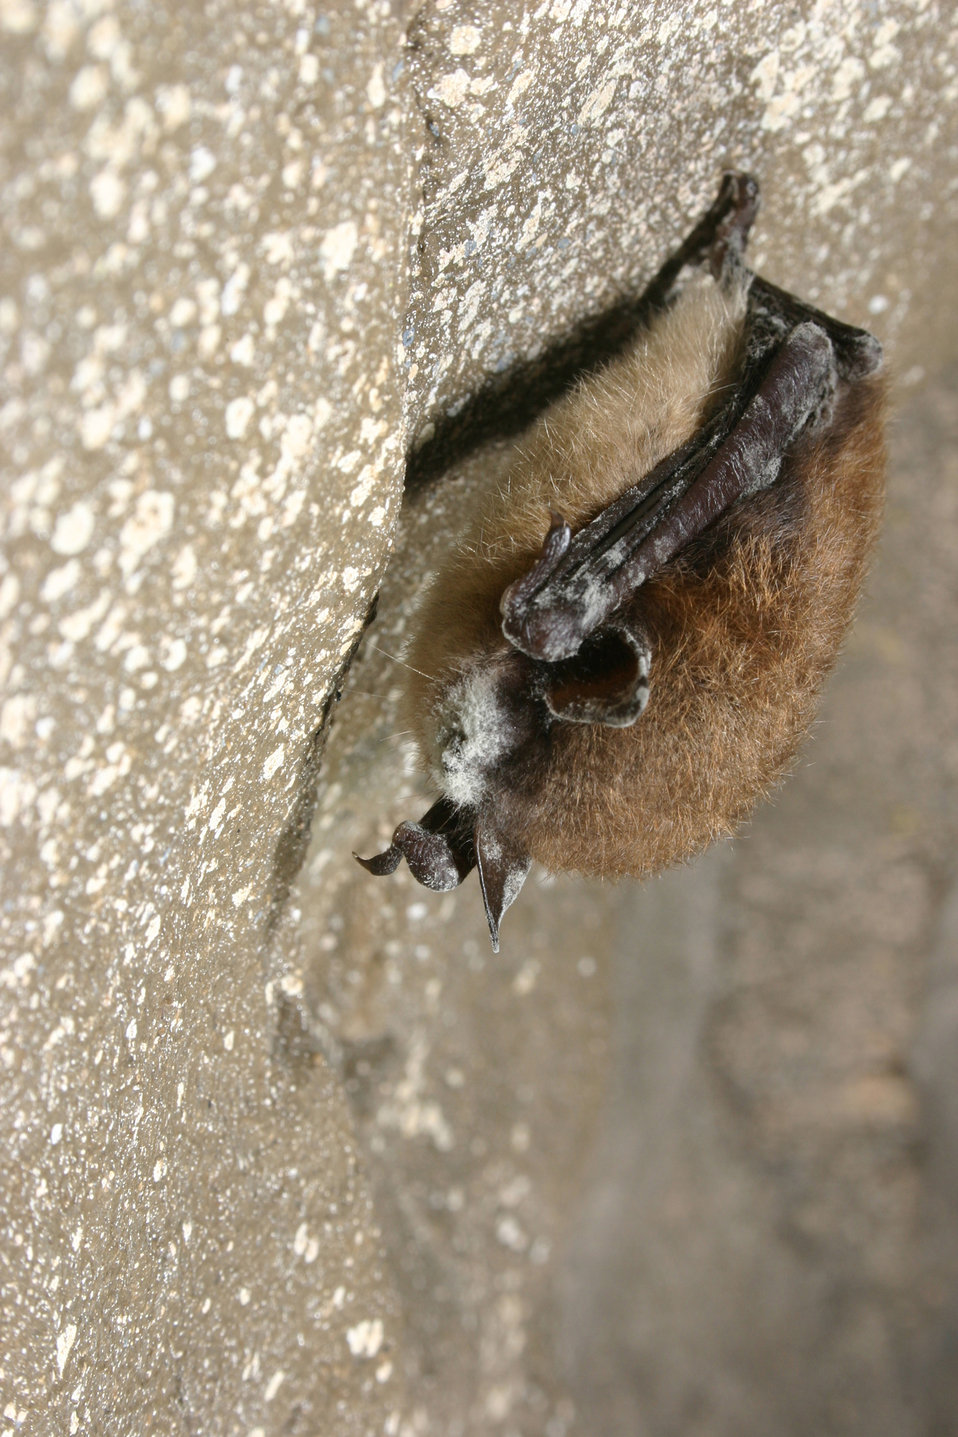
Little brown bat with white-nose syndrome, New York

Credit: Photo courtesy Al Hicks, New York Department of Environmental Conservation

Image size: 1400p (4.667) W x 2100p (7.0) H, 300ppi, 1.87 MB